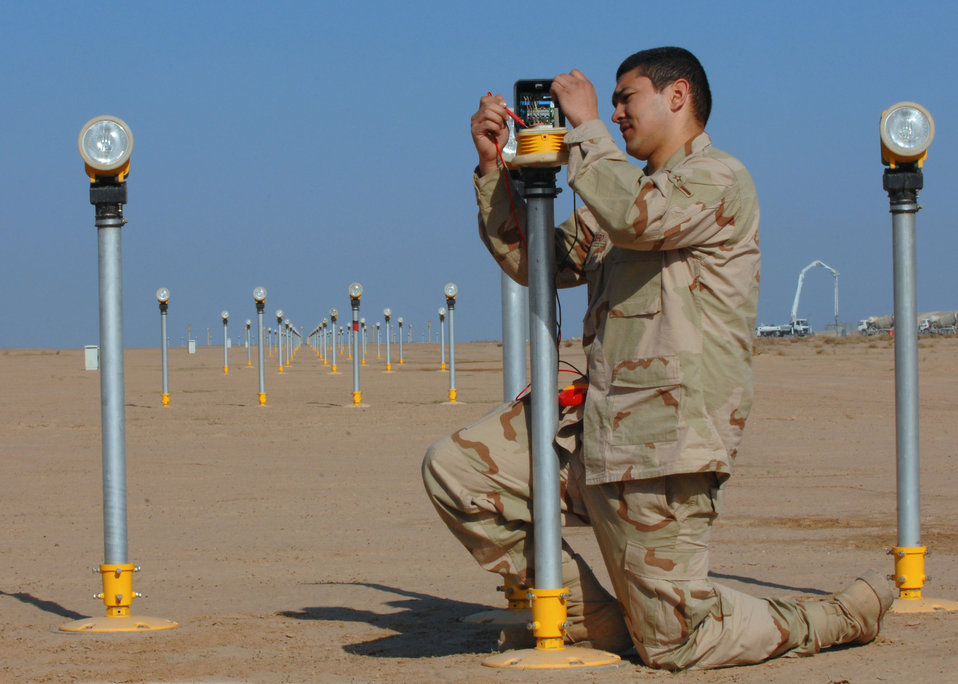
Lighting the way

Airman Nicholas Wengerd troubleshoots a strobe approach light Feb. 28 at Balad Air Base, Iraq. The strobe lights are used during foggy weather conditions to guide pilots in during landing operations. Airman Wengerd, a 332nd Expeditionary Civil Engineer Squadron electrician, is deployed from Ellsworth Air Force Base, S.D.